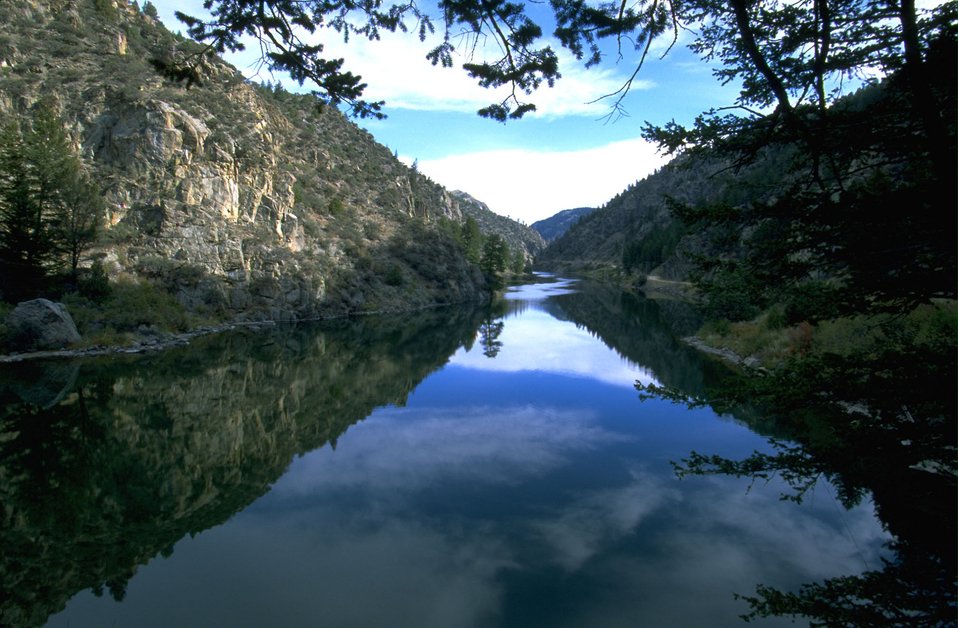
Reflection of sky and hillsides